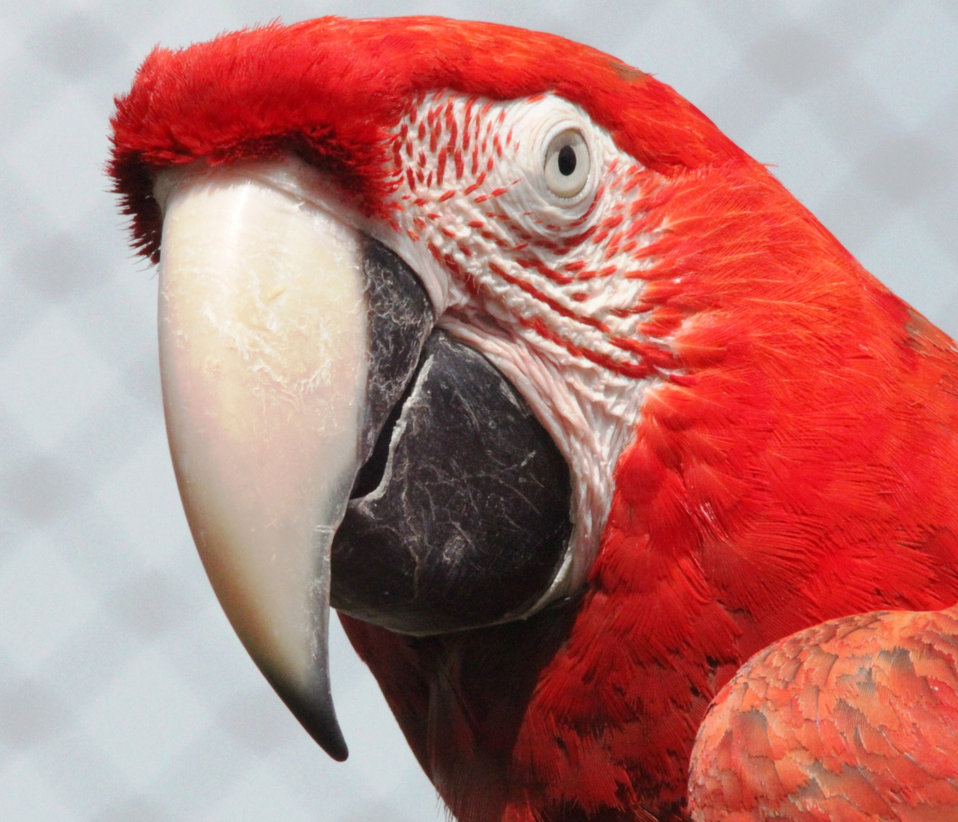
Red macaw head.